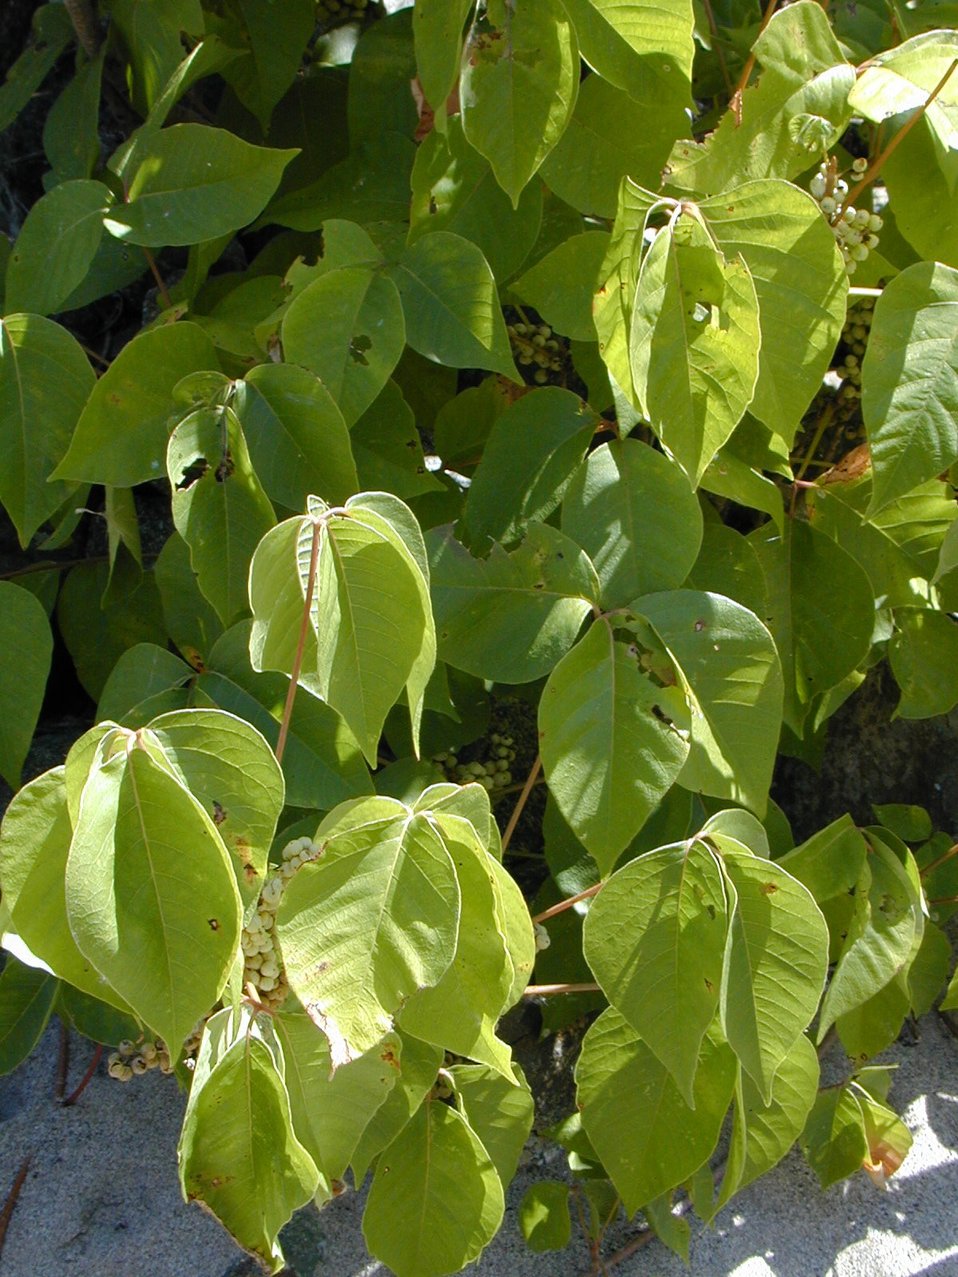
Poison Ivy Cottonwood Field Office UCSC